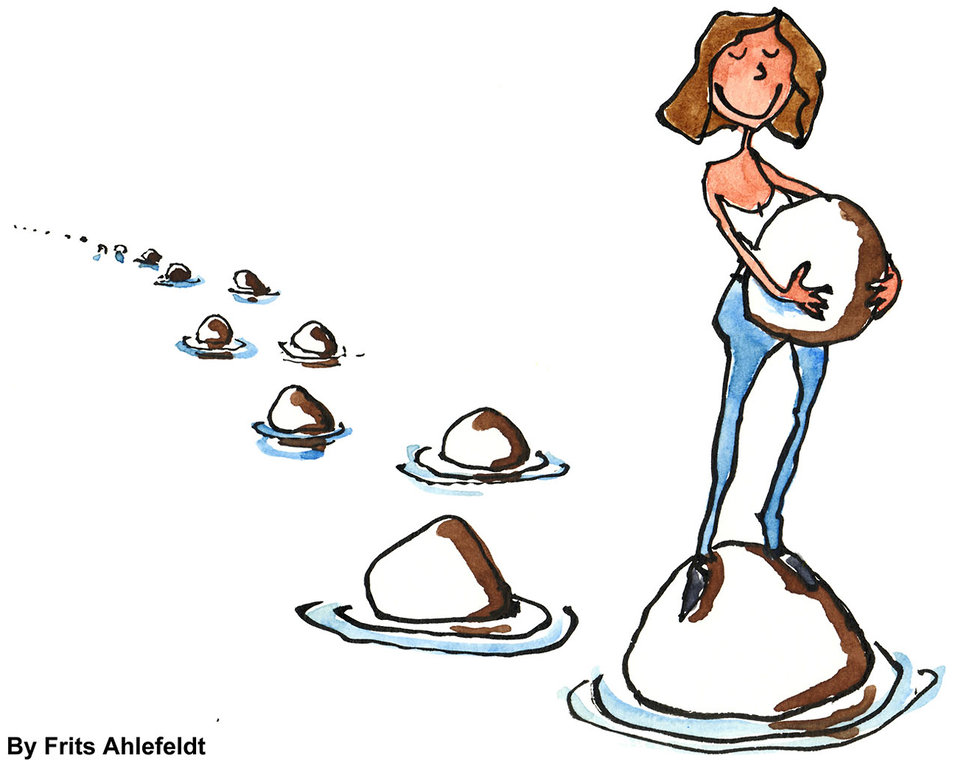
Creating her own way

Woman putting down stepping stones.